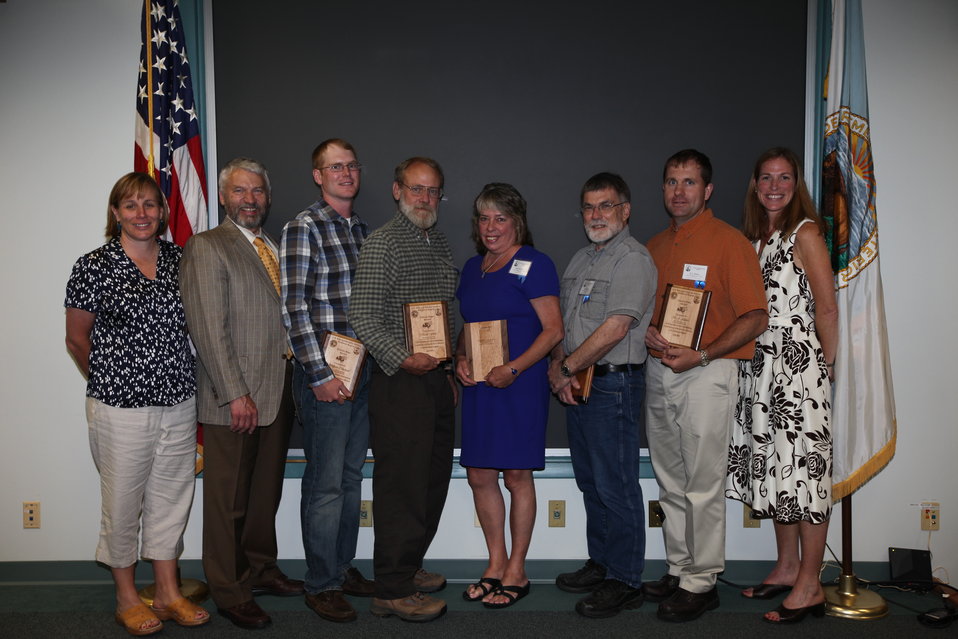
Unsung Heroes White River NFH staff

From left to right: Deputy Regional Director Deb Rocque, Deputy Director Rowan Gould, Will Olmstead, Scott Frost, Judy Romero, Ken Gillette, B.J. Allaire, and Regional Director Wendi Weber